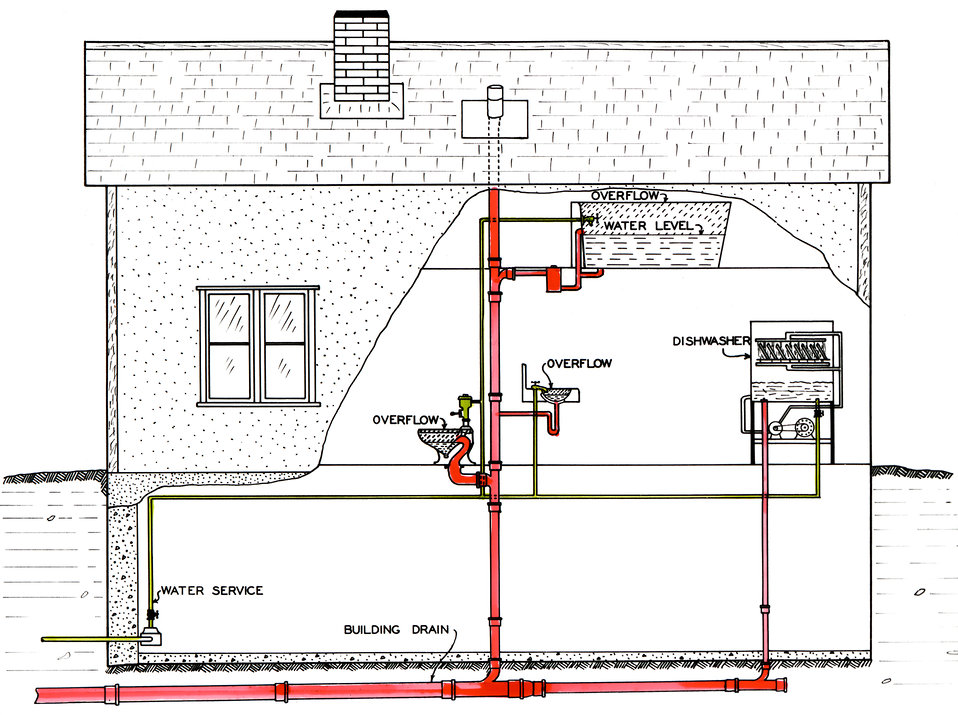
This historic diagram, which had been digitally enhanced, depicted an example of an unsatisfactory plumbing configuration for a typical residence. This cross-section of the building, revealing its water intake and outflow points, showed a hazardous cross-connection between water supplies, and the sewage disposal system. The light-green lines represented water intake. The red lines represented waste water disposal lines running into the building drain at the bottom of the diagram.